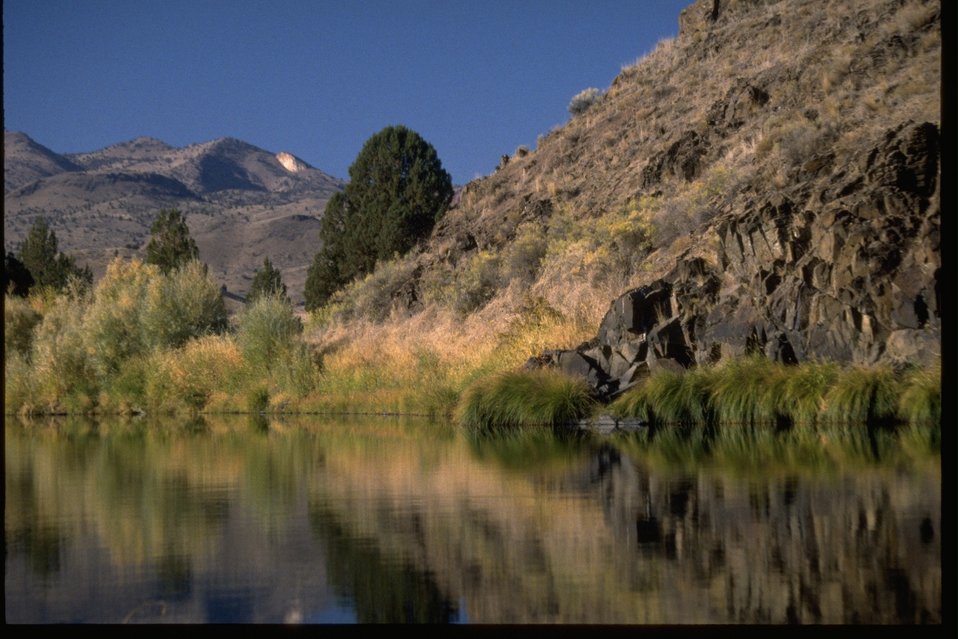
Riparian vegetation along the bank of the John Day River, near Bridge Creek.